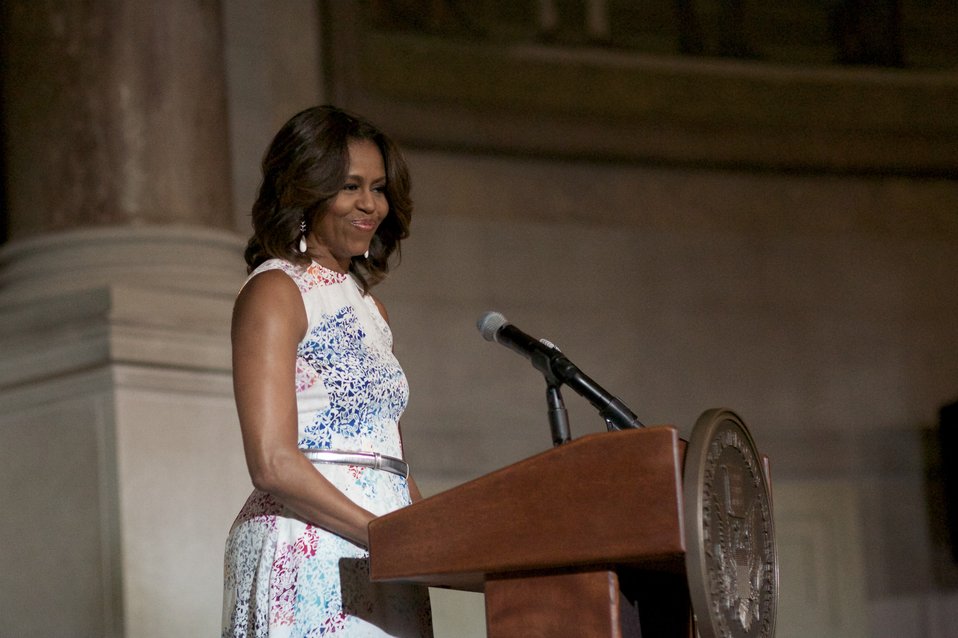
Naturalization Ceremony with Michelle Obama